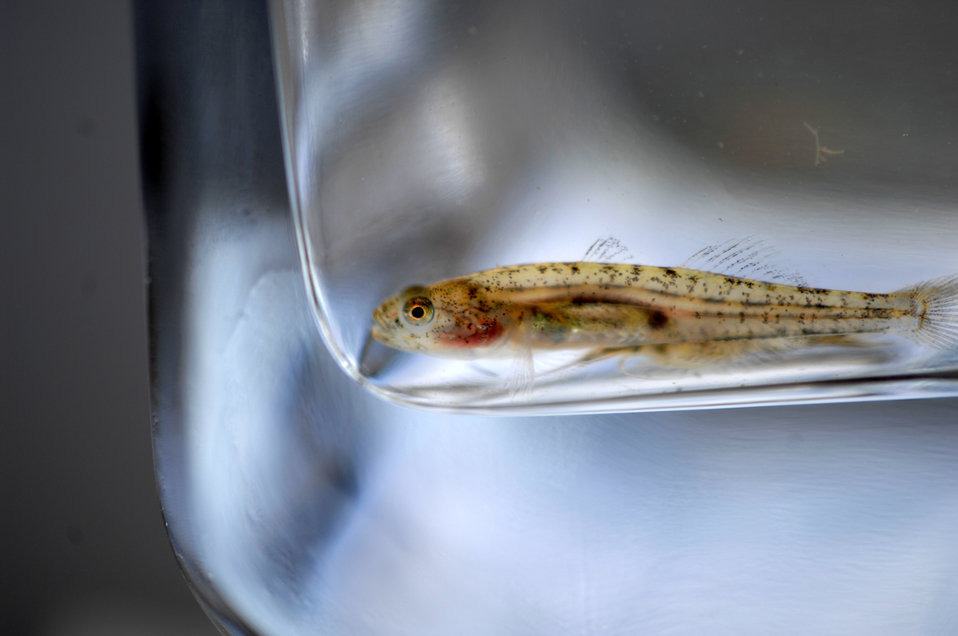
Tidewater Goby 1

Prior to the lagoon breach, the U.S. Fish and Wildlife Service went out to survey for the endangered tidewater goby.